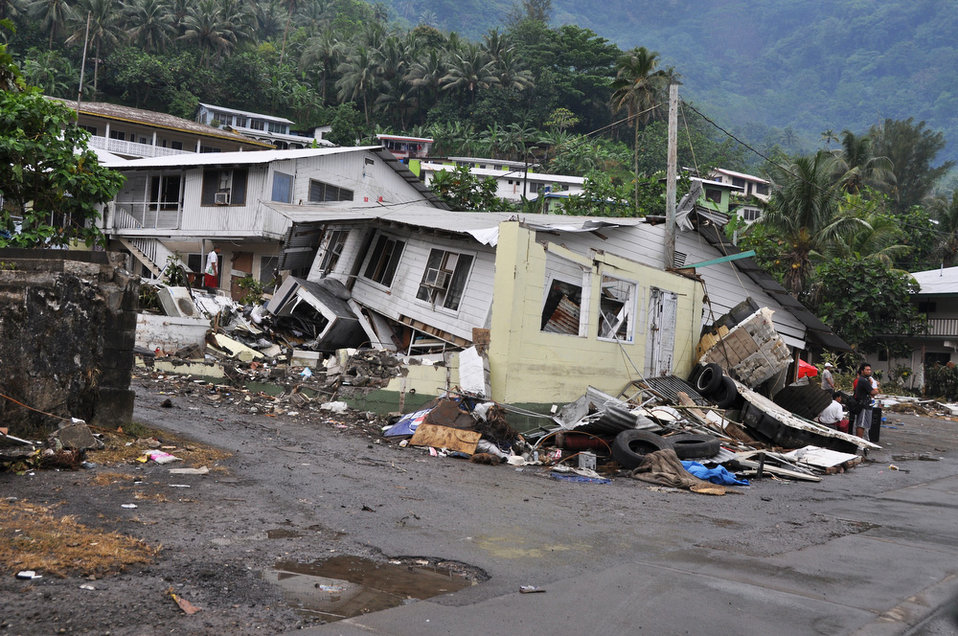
Hawaii Guard members assess damages in American Samoa

A home's foundation sits on an angle after a tsunami caused a great amount of structural damage to the island Oct. 1, 2009, in Pago Pago, American Samoa. The island nation was struck Sept. 29 by an 8.3 magnitude earthquake generating 15-foot waves and destroying whole villages.